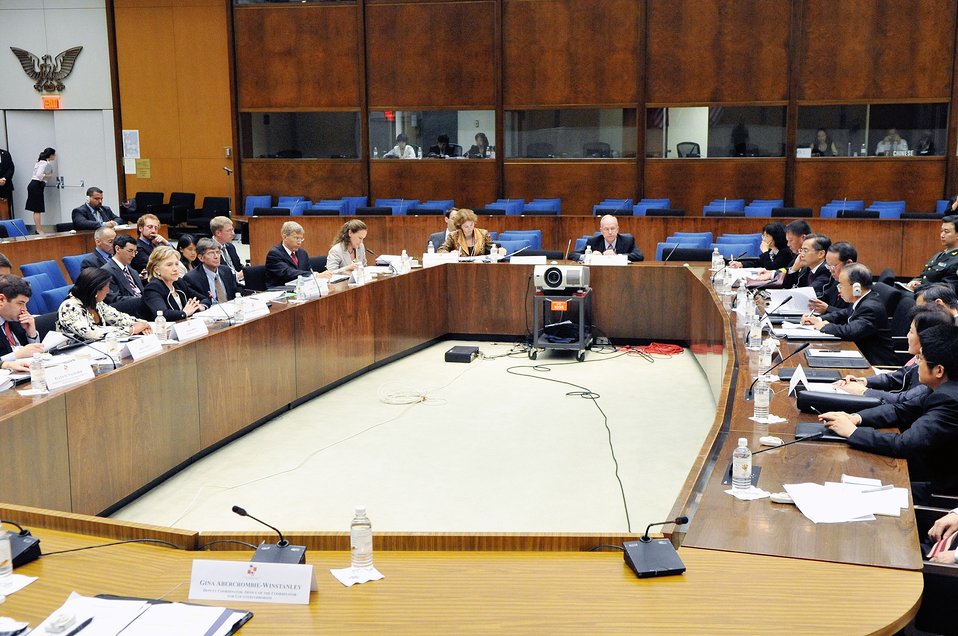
Secretary Clinton Attends U.S.-China Strategic and Economic Dialogue

U.S. Secretary of State Hillary Rodham Clinton at the Strategic Track Session 1 on Bilateral Relations during the U.S.-China Strategic and Economic Dialogue at the U.S. Department of State in Washington, DC July 27, 2009.